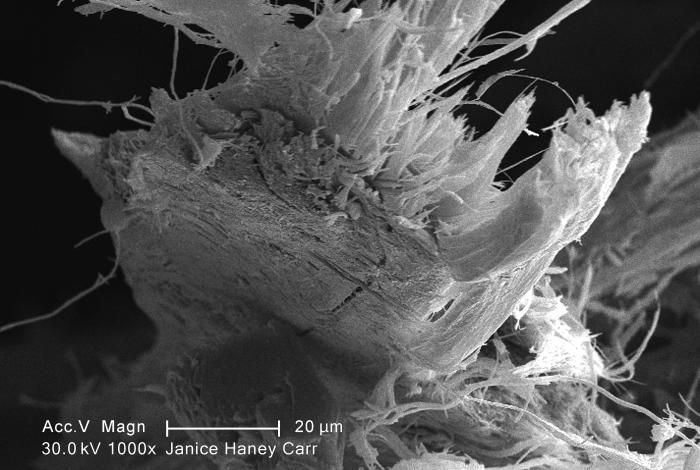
Under a moderate magnification of 1000X, this scanning electron micrograph (SEM) revealed some of the microcrystalline ultrastructure exhibited by a piece of raw chrysotile, or white asbestos, which had been excavated from the Lowell Asbestos Mine on Belvidere Mountain, Vermont.